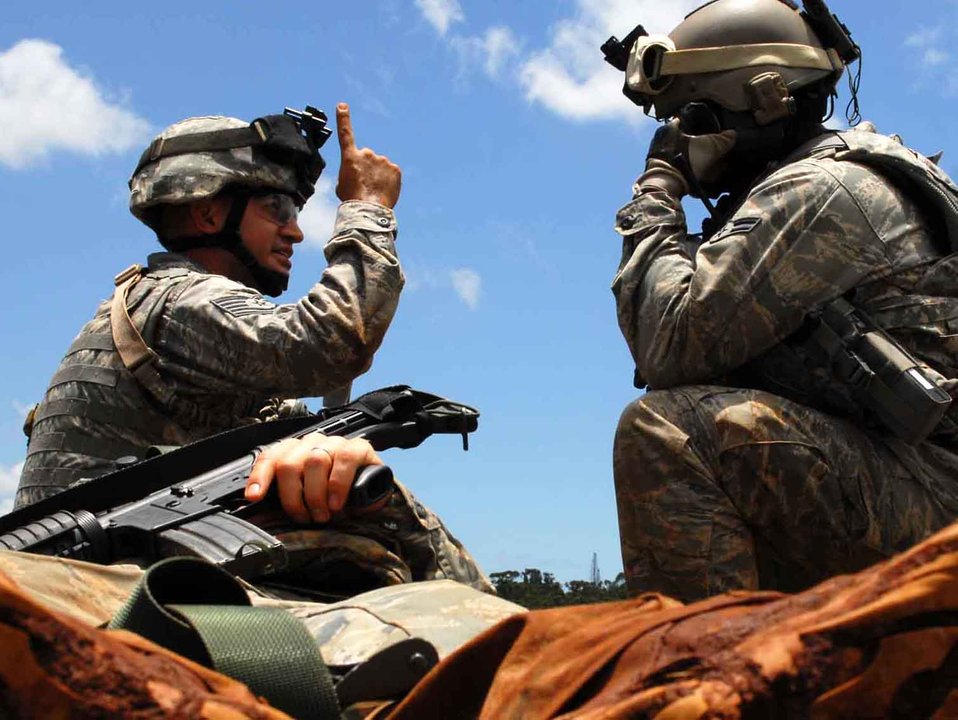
Airmen train with Army to become JTACs

Tech. Sgt. Alejandro Castillo indicates to Airman 1st Class Chris Tamblyn, 25th Air Support Operations Squadron tactical air control party, to prepare to load a casualty on a CH-47 Chinook for aeromedical evacuation during field training June 24. Radio operators, maintainers and drivers camped out for four days to sharpen proficiencies necessary for upgrade training to become combat mission-ready joint terminal attack controllers. Because they're training now, they'll have a better idea of what to expect when they get to Afghanistan with an Army unit.